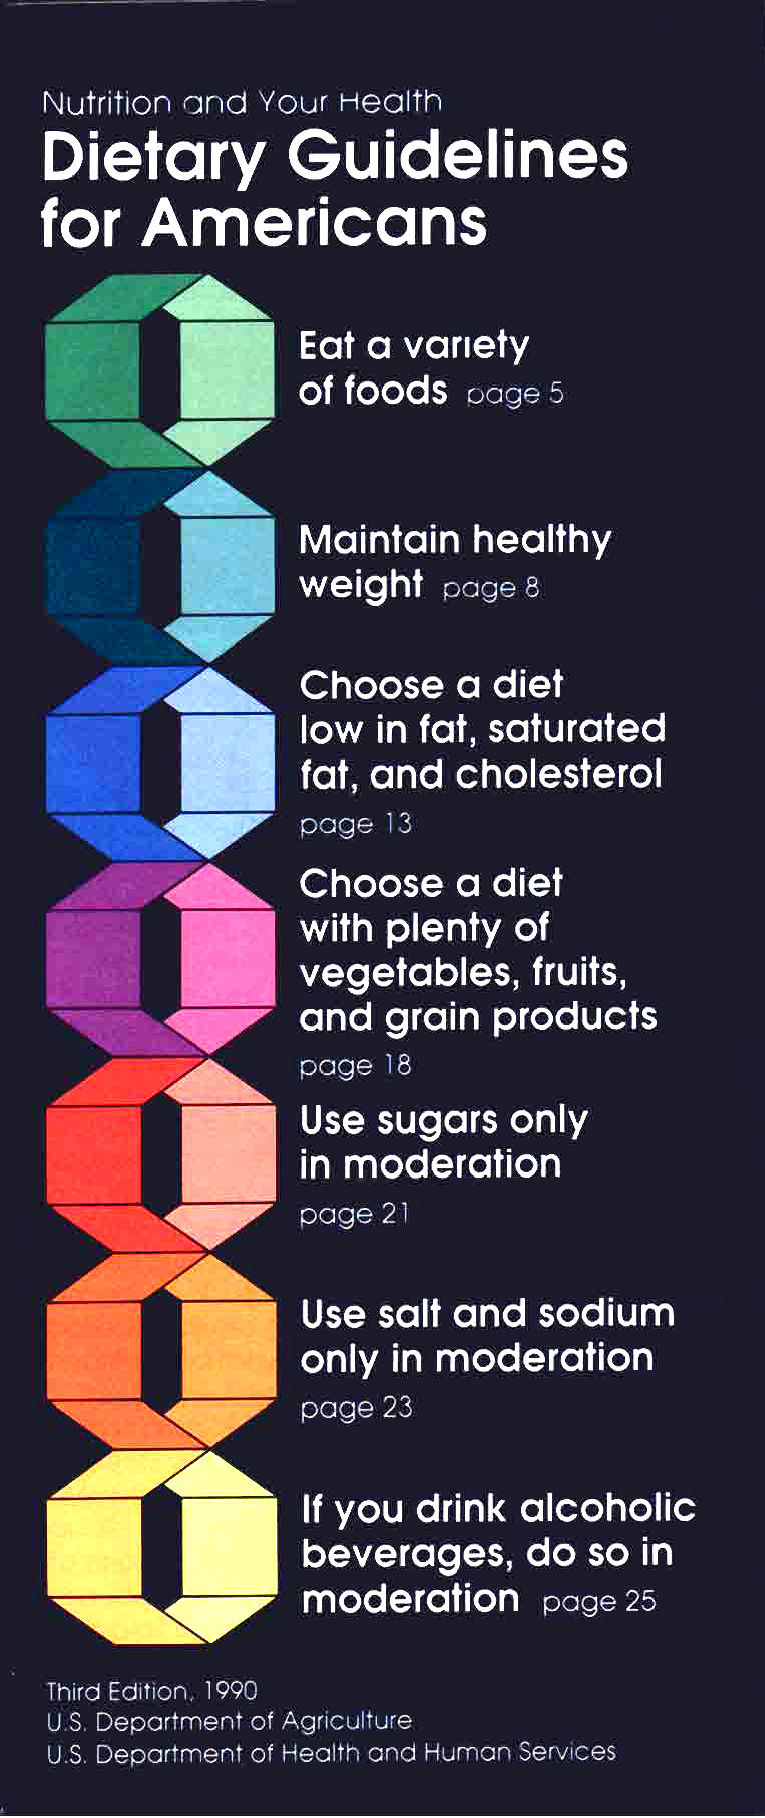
This the cover of the 1990 Dietary Guidelines for Americans produced by the Center for Nutrition Policy and Promotion Service (CNNP).